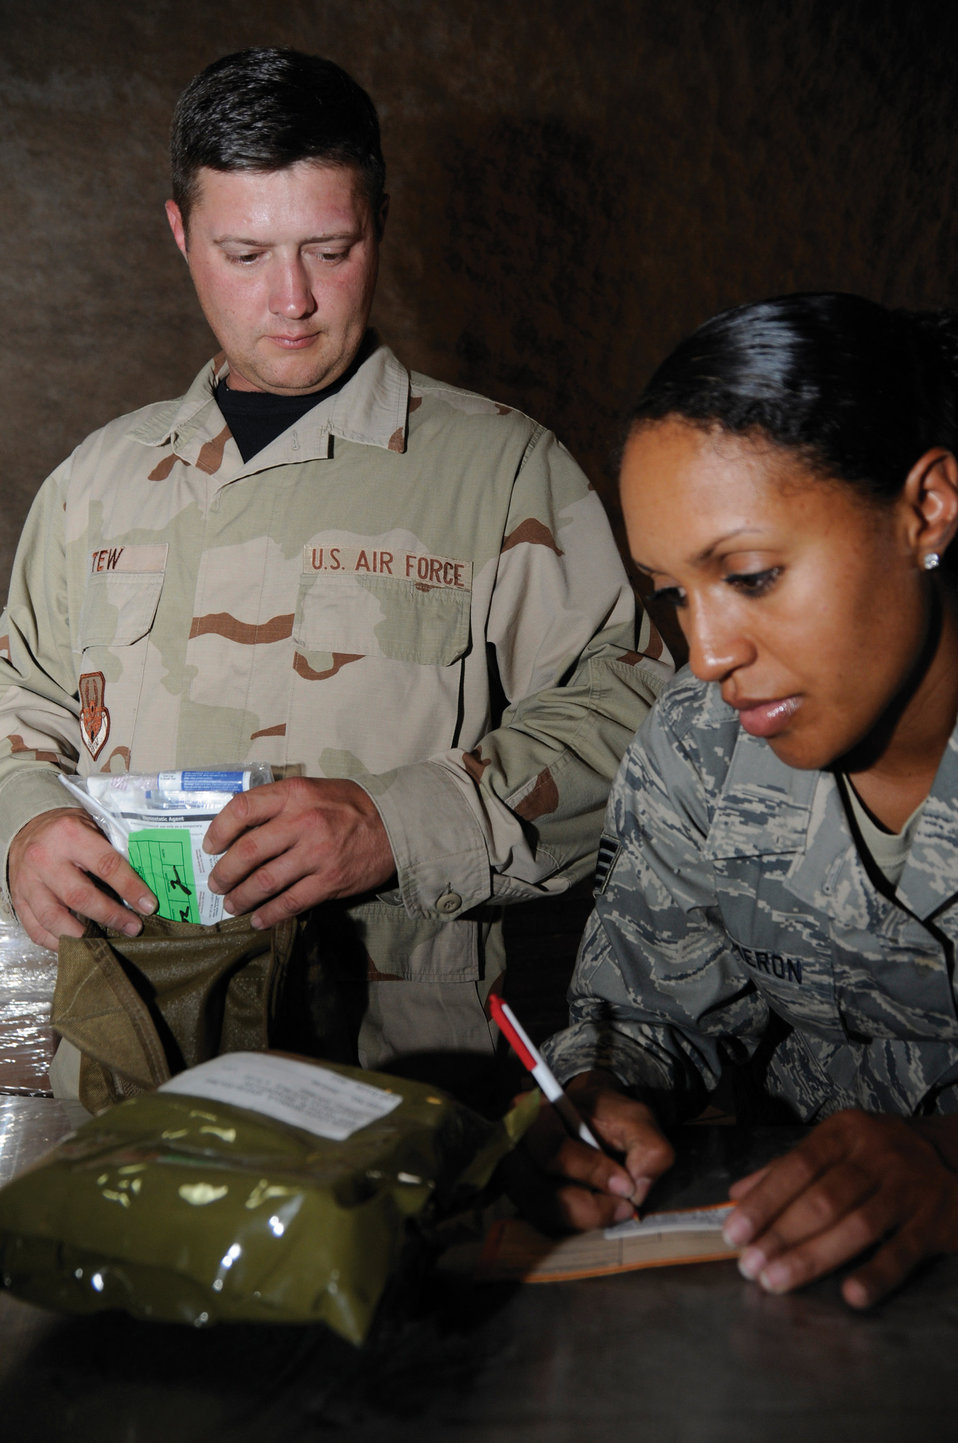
Small group takes small packages, makes huge impact

Tech. Sgt. James Tew places a minor module inside an individual first aid kit while Staff Sgt. Lizeth Cameron, his replacement, writes the trauma module information on a serviceability tag Aug. 23 at an air base in Southwest Asia. Sergeant Tew and Sergeant Cameron are responsible for ensuring the individual first aid kits are packed containing the right treatment for immediate medical care. Sergeant Tew, outgoing NCO in charge of warehouse and distribution assigned to the 379th Expeditionary Medical Group, and a native of Mobile, Ala., is deployed from Keesler Air Force Base, Miss., and Sergeant Cameron, a native of Mexico City, is deployed from the U.S. Air Force Academy, Colo.